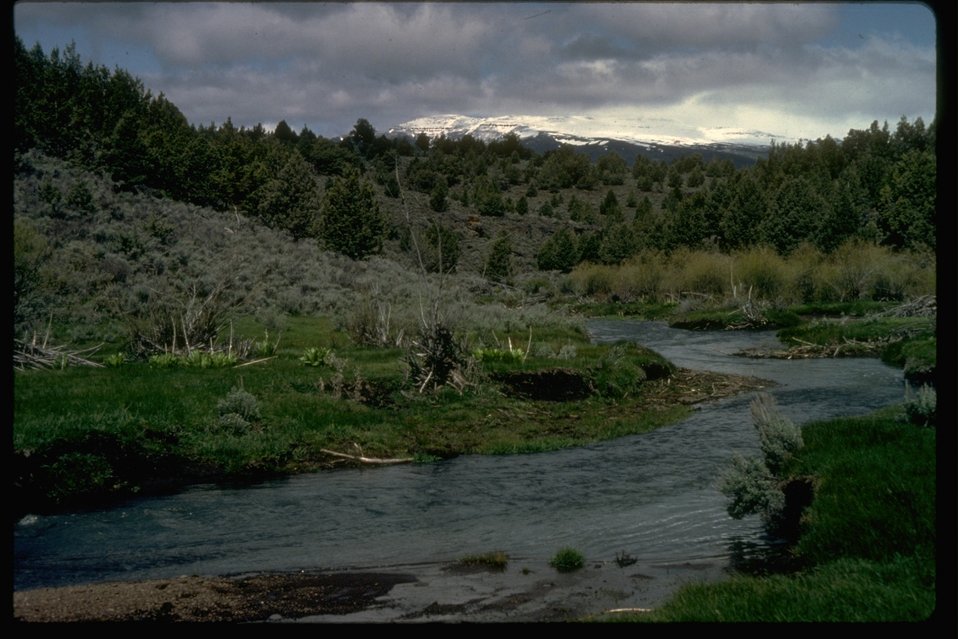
South Fork of the Blitzen River. OR 2-85G